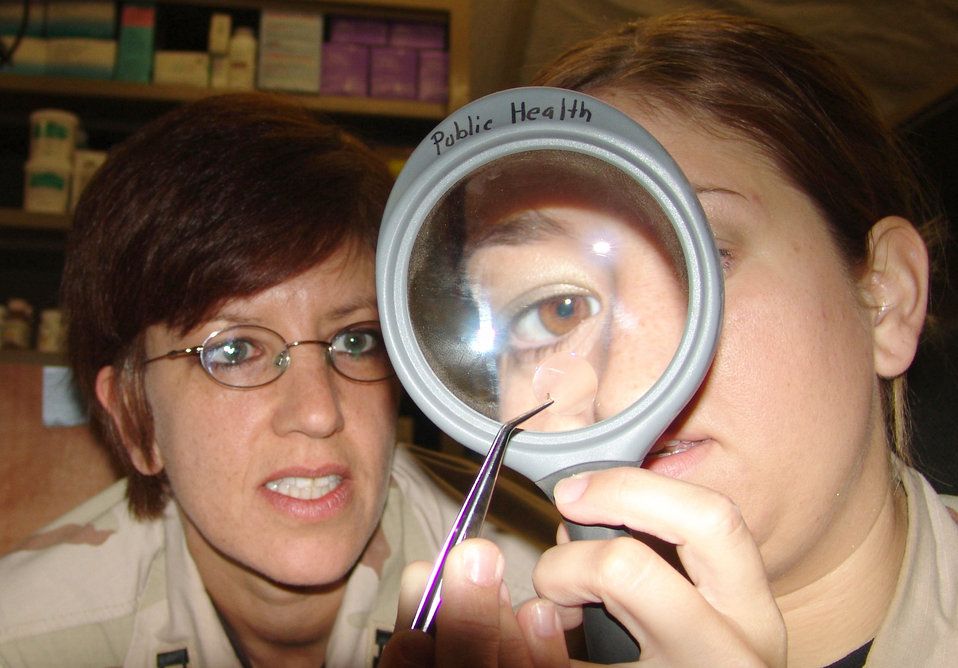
Deployed Airmen use 'germ warfare' to ensure force readiness

BAGHDAD, Iraq -- Capt. Gabrielle Childs (left) and Staff Sgt. Becky Patterson sort sand flies and mosquitoes that will be tested for insect-borne diseases that threaten U.S. forces deployed to Iraq. They are assigned to the 447th Expeditionary Medical Squadron's public health flight. Captain Childs is deployed from Luke Air Force Base, Ariz., and Sergeant Patterson is deployed from Maxwell AFB, Ala.